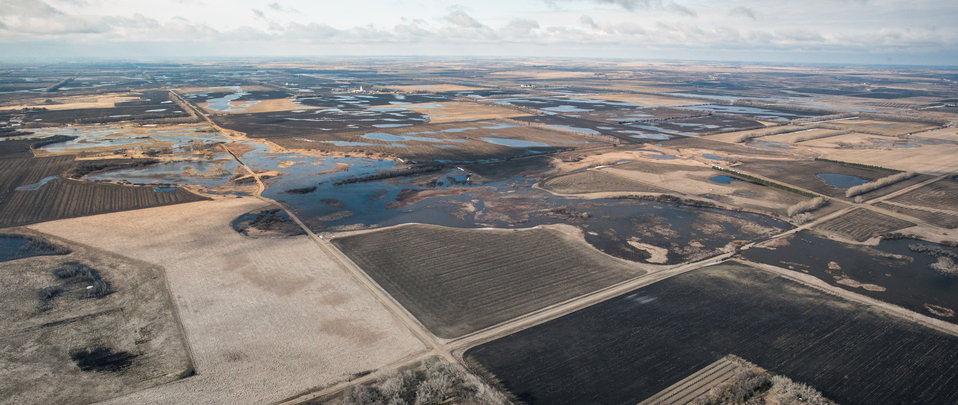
Proposed Dam site #10, on Turtle River Watershed in Grand Forks County, ND, part of the Red River basin, on Wednesday, May 1, 2013. To learn about the Red River Basin Initiative, see www.mn.nrcs.usda.gov/news/features13/RRBI.html.